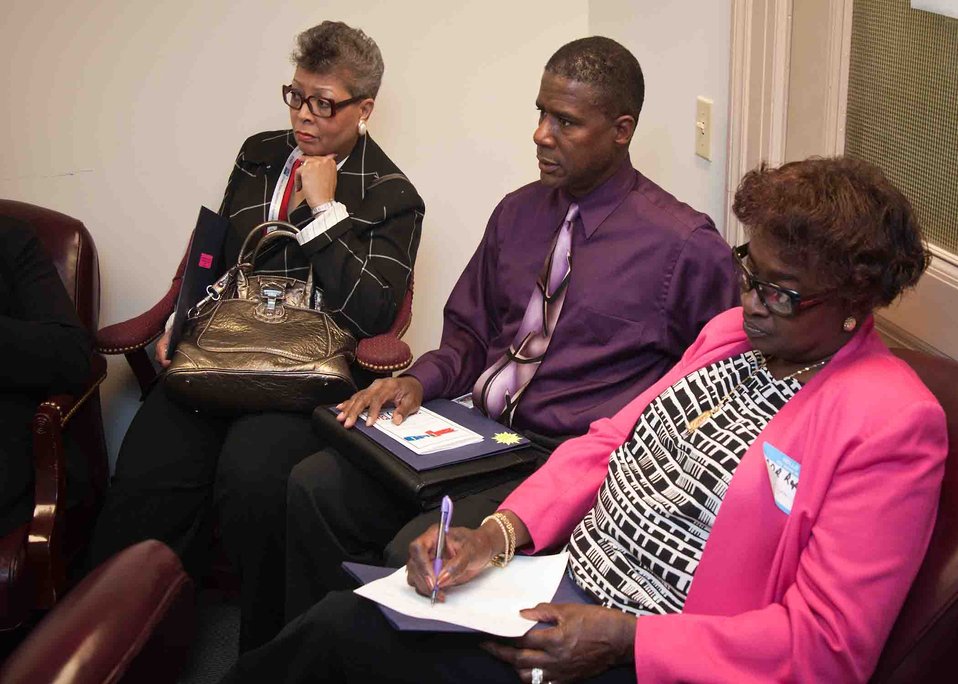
(L to R) Alternative Dispute Resolution Program Manager for the Food Safety Inspection Service Anita Cunningham, Equal Employment Opportunity Specialist, Food and Nutrition Service Randolph Cassidy, and Alternative Dispute Resolution Representative, Rural Development Cheryl Prejean Greaux listen during an Early Resolution and Conciliation Division open house and training workshop for employees and supervisors at the United States Department of Agriculture (USDA) in Washington, DC, Wednesday, Jun. 15, 2011. The primary goal of the workshop was to strengthen the Alternative Dispute Resolution (ADR) community through outreach, training and partnership with agencies in USDA and make employees aware of ADR.